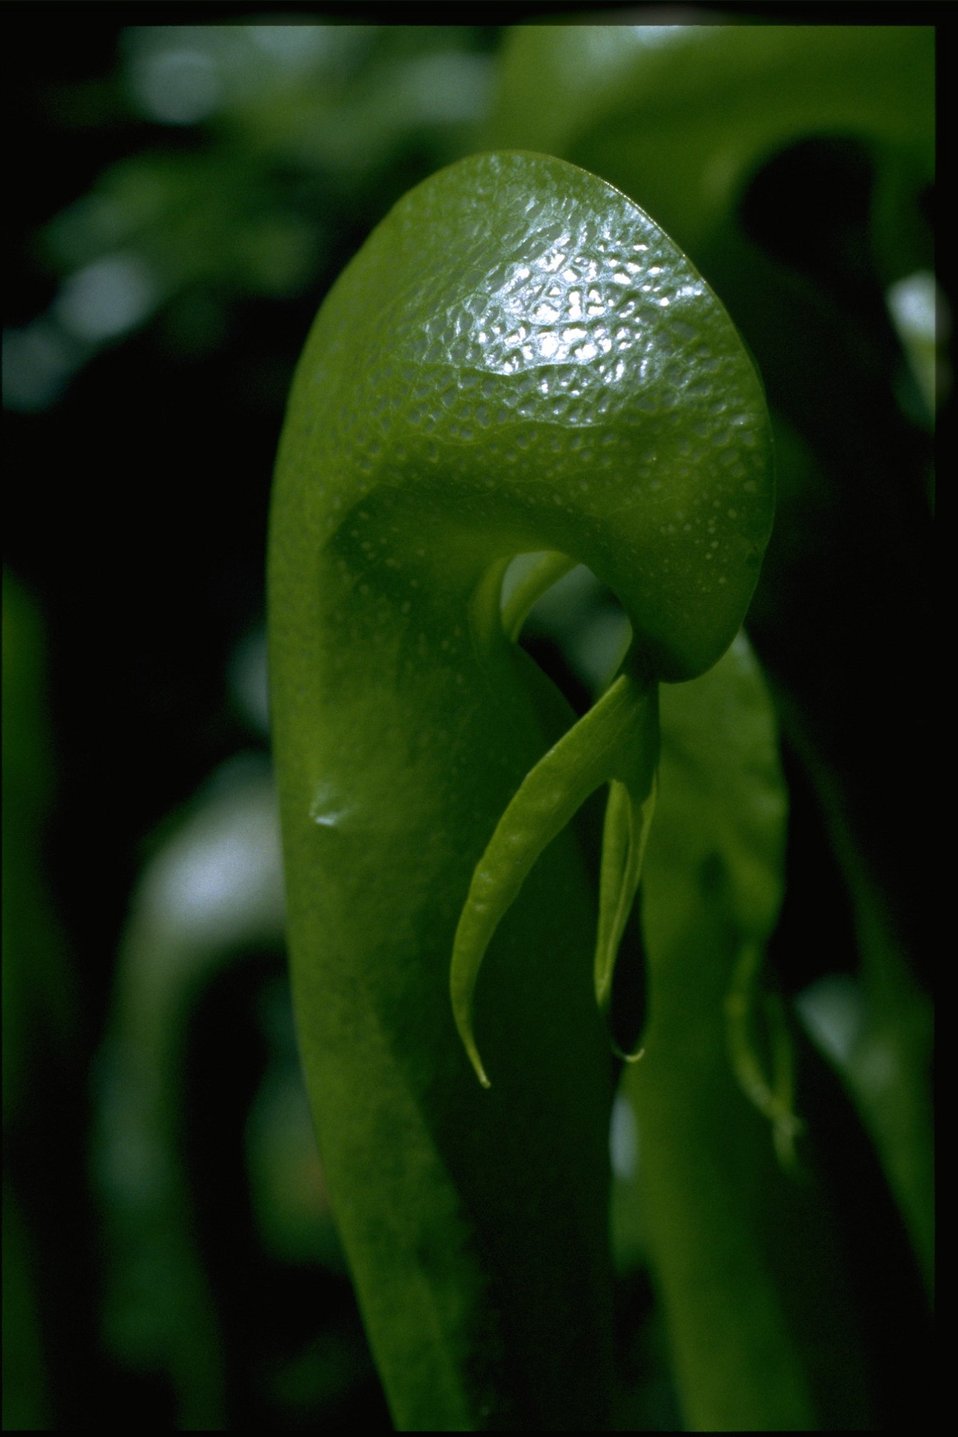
Closeup shot of Cobra Lily, Darlingtonia californica.